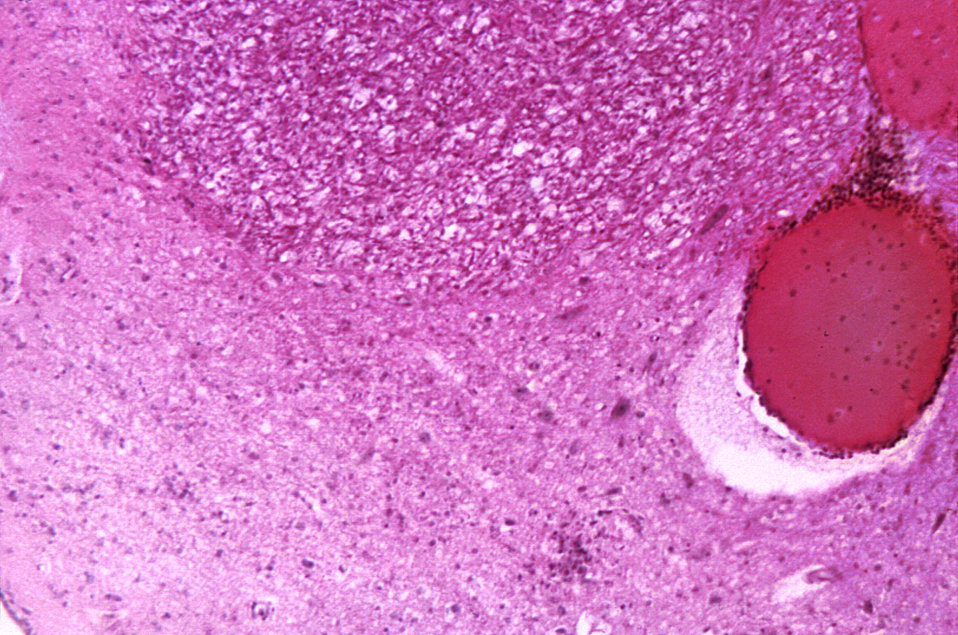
Pontine histopathology due to the affects of poliomyelitis.